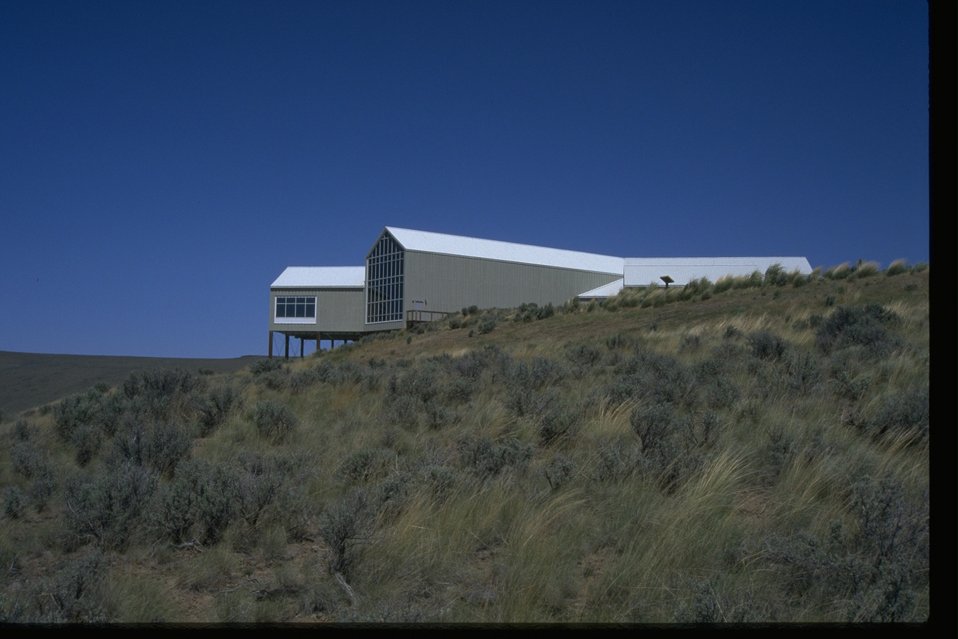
Distant exterior view of the NHOTIC.